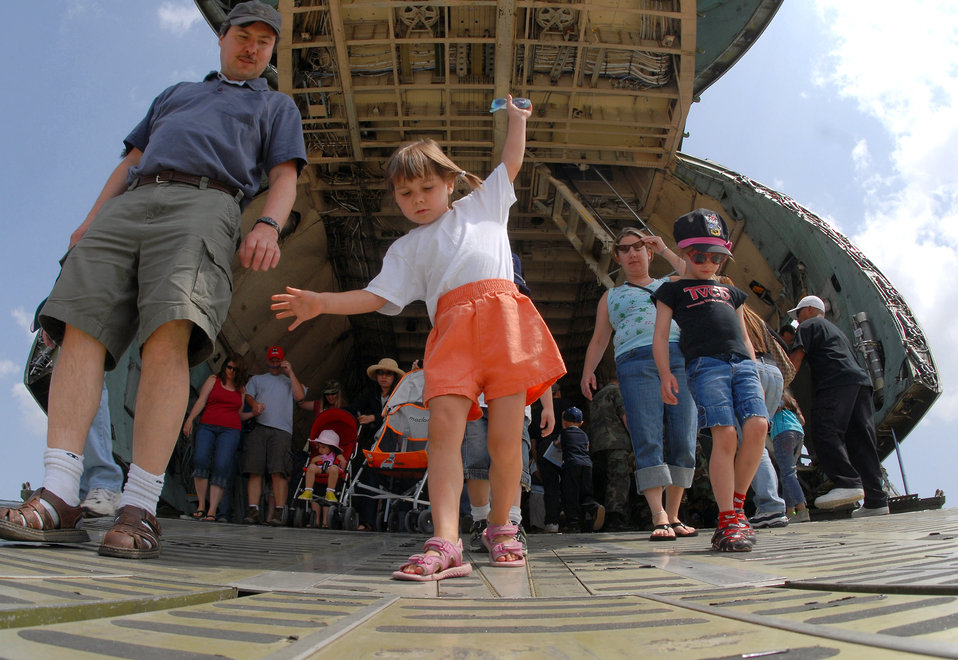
I won't fall

A young girl carefully walks down the cargo ramp of a C-5 Galaxy during AirFest 2008 at March Air Reserve Base, Calif. The air show coincides with the 90th anniversary of March as a military base and the 60th anniversary of the Air Force Reserve.